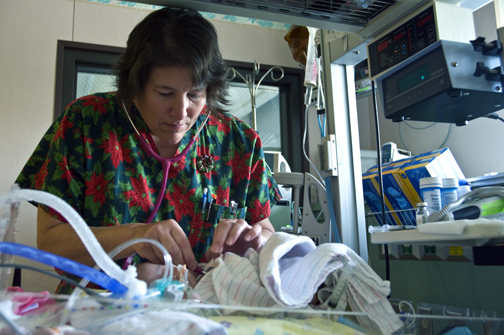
Neonatal Intensive Care Unit

Cheryl Collicott checks the heartbeat of a premature newborn admitted to the Level 3 area of the Neonatal Intensive Care Unit Dec. 10, 2009 at the Wilford Hall Medical Center on Lackland Air Force Base, Texas. Babies cared for in the Level 3 section of the NICU need technological equipment such as ventilators and incubators. Ms. Collicott is a clinical nurse assigned to the NICU.